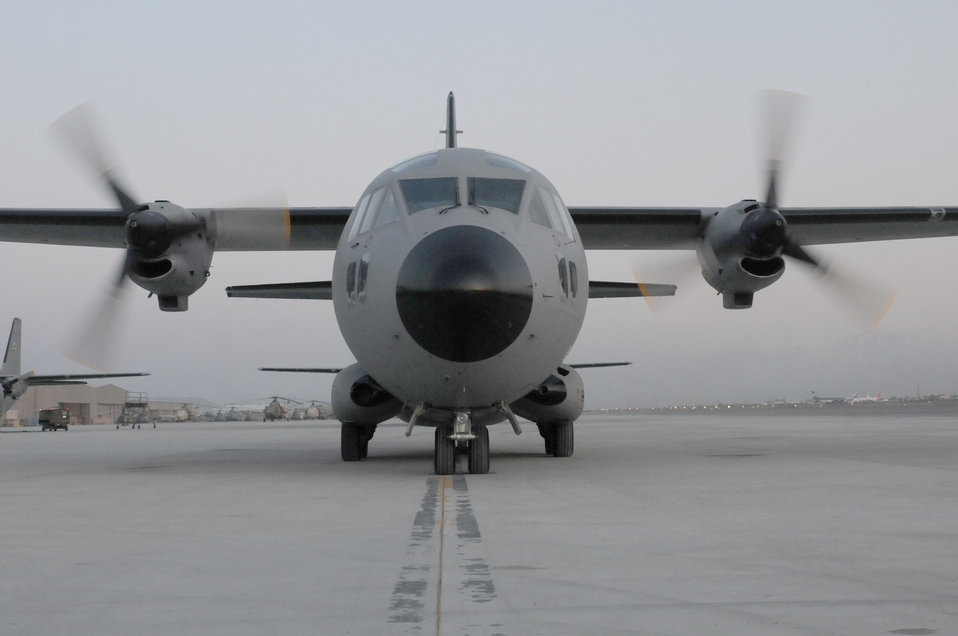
Afghan air force C-27 fleet half way to goal

The 10th C-27A Spartan to join the Afghan air force comes to a rest with its propellers still spinning on the flight-line of the Afghan Air Force Base Feb. 20, 2011, in Kabul. With the new C-27, the Afghan air force is halfway to its goal of 20 C-27A Spartans.